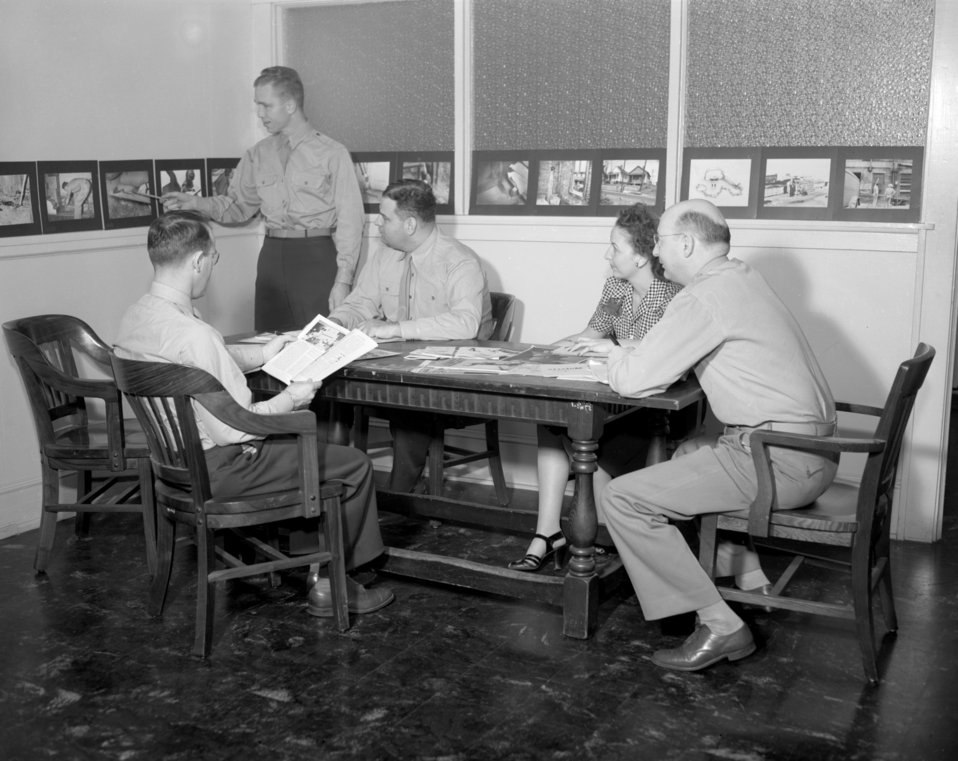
Here a number of CDC personnel analyze field data in order to formulate an epidemiologic plan of action.